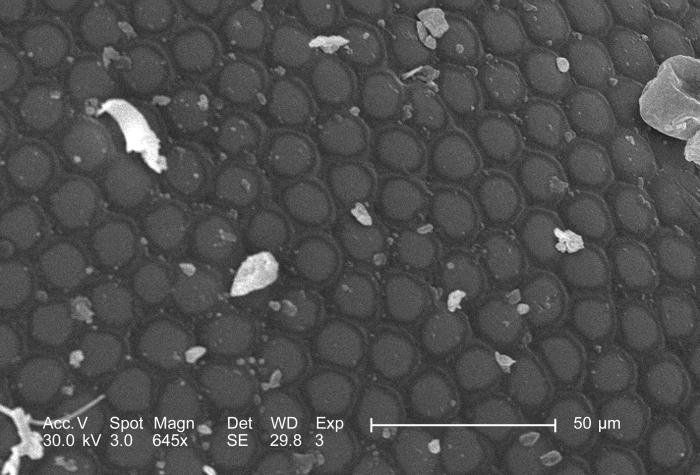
Under a moderately-high magnification of 645x, this scanning electron micrograph (SEM) depicted a highly magnified view of a compound eye of an unidentified green-colored flying insect found outside on the grounds of the Decatur, Georgia suburbs. The debris covering the eye was mainly vegetative in nature, composed primarily of pollen granules, as well as disintegrated plant fibers.